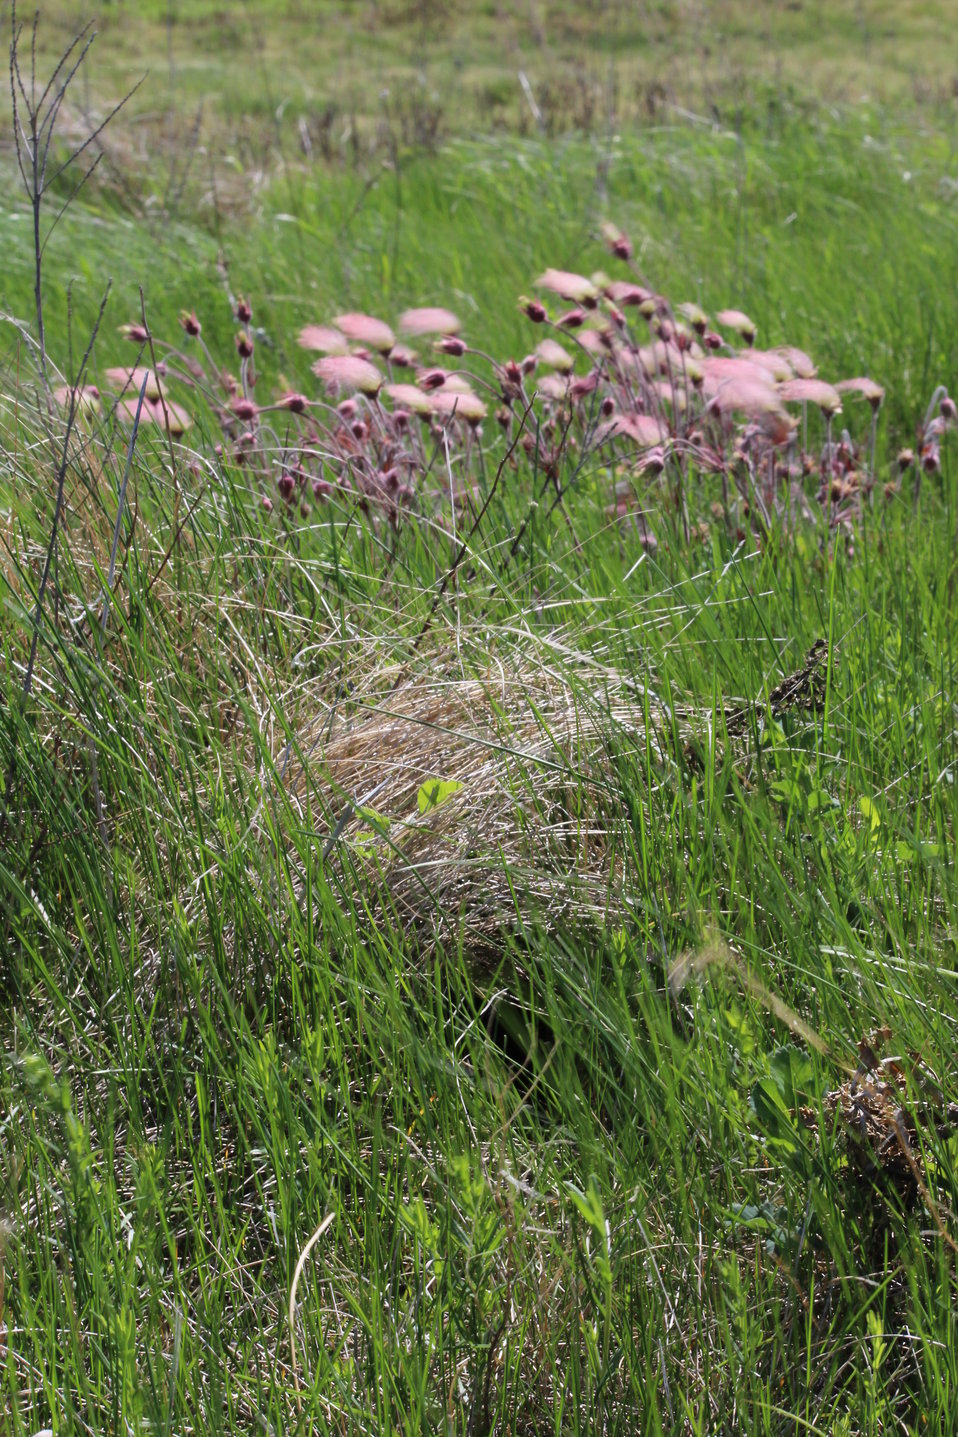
Western Meadowlark Nest

It's tough to spot, but in front of the Prairie smoke, there is a raised or domed clump of dead grass. The dark area near the base is the opening into the well-hidden nest of the Western meadowlark (Sturnella neglecta).